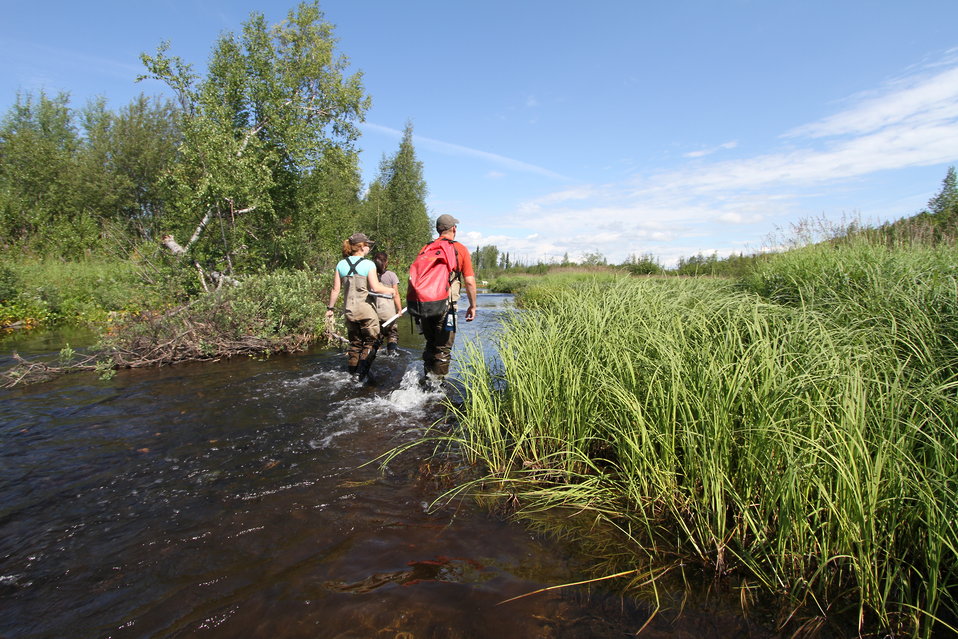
Anchorage Field Office Fisheries Crew at Work

Walking up Fish Creek to retrieve minnow traps as part of Big Lake juvenile coho study. USFWS/Katrina Mueller